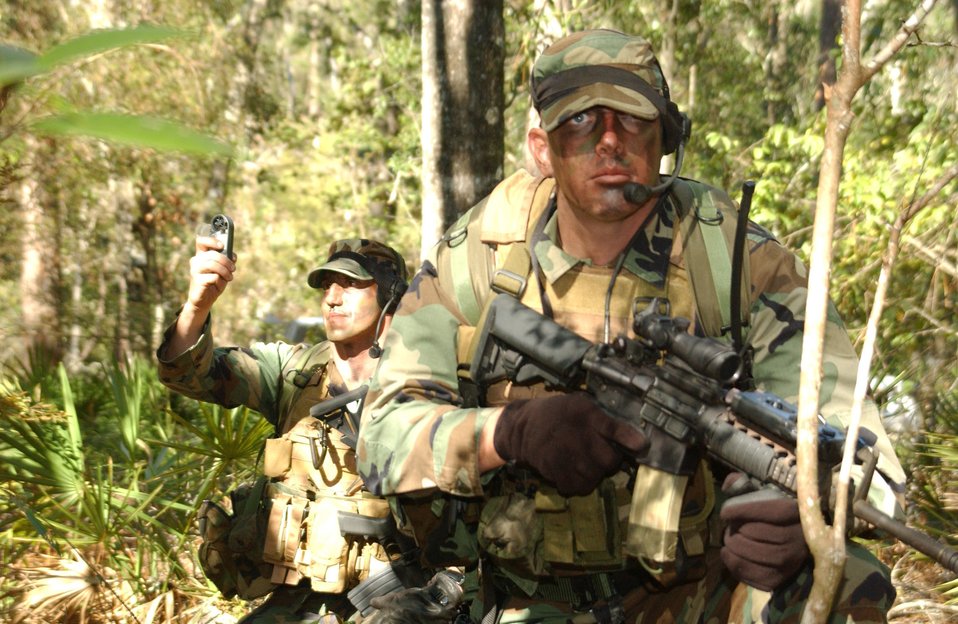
Weather warriors

HURLBURT FIELD, Fla. -- Staff Sgt. Jody Ball scans the surrounding area for threats while Tech. Sgt. Rick Rohde collects weather data during a training exercise here.